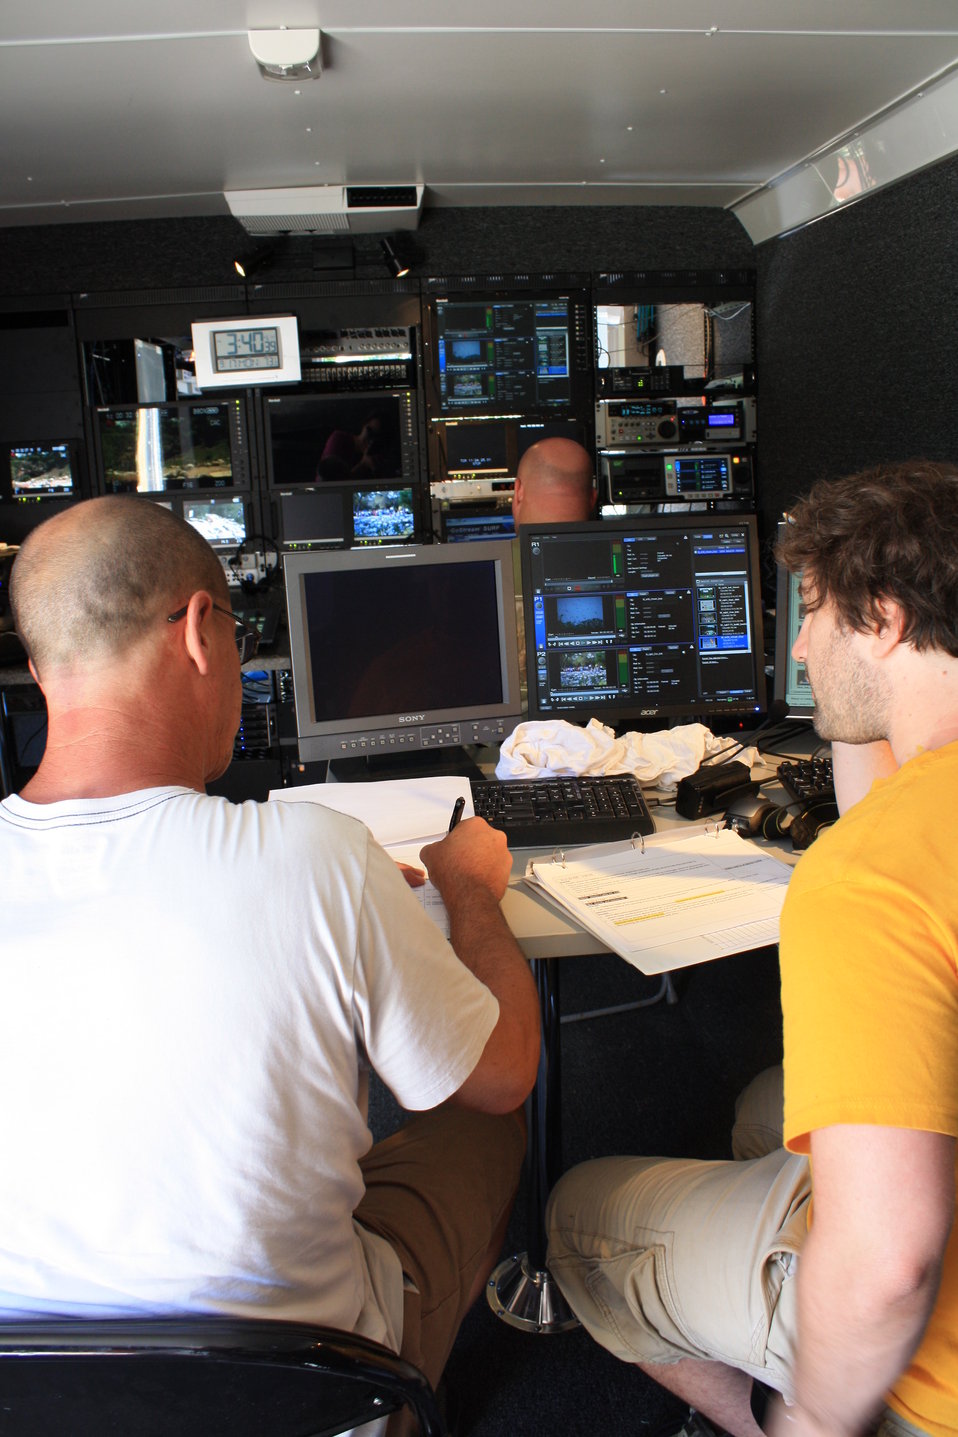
Interior of the Prince William Network mobile broadcast unit